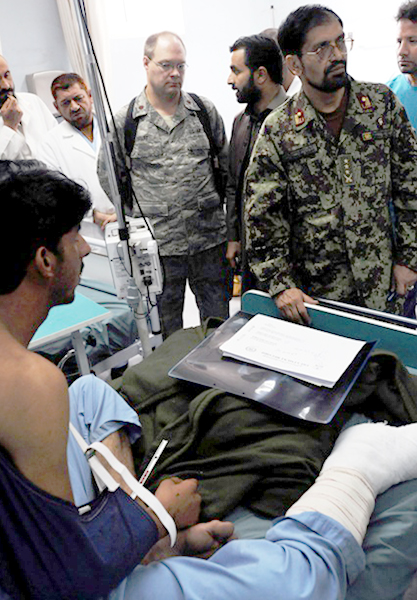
Physician mentors Afghan doctors

Maj. (Dr.) Robert Sarlay Jr. observes as Afghan army physicians conduct patient rounds Aug. 15, 2010, at the Paktia Regional Medical Hospital, Afghanistan. Major Sarlay is a mentor for the medical embedded training team at Forward Operating Base Lightning, Afghanistan.